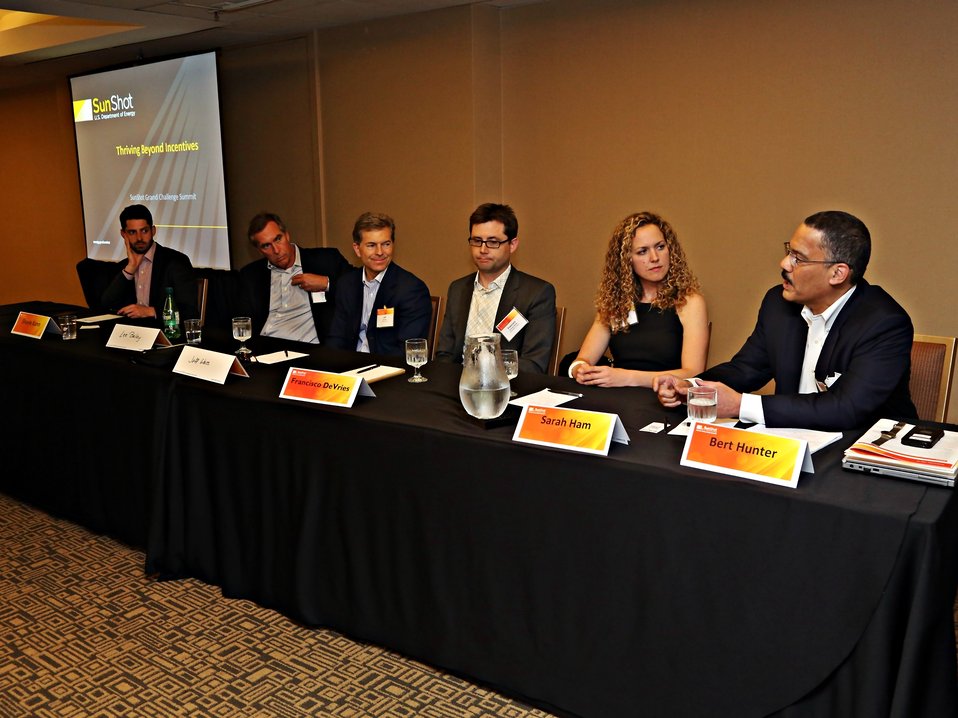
Breakout Sessions 7